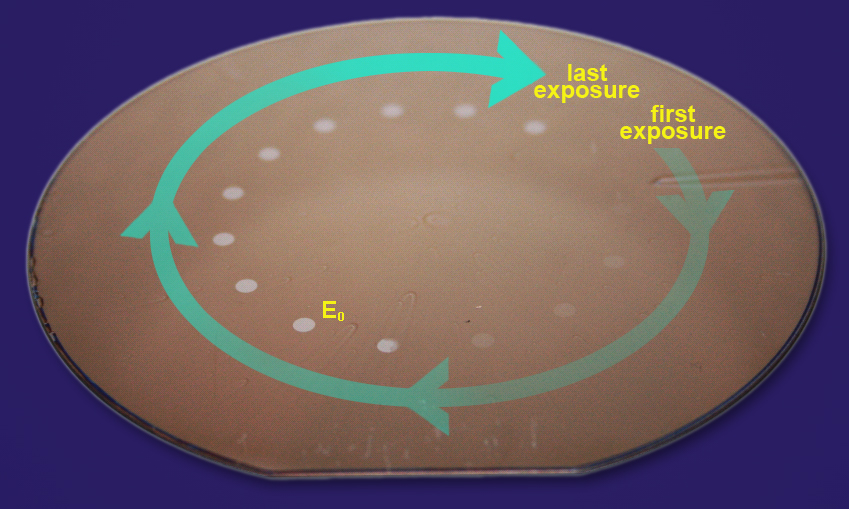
Extreme Ultraviolet Photoresists

NIST researchers exposed a 300 mm silicon wafer with incrementally increasing doses of extreme ultraviolet light (EUV) in 15 areas. After the wafer was developed, the team determined that the seventh exposure was the minimum dose required (E0) to fully remove the resist.